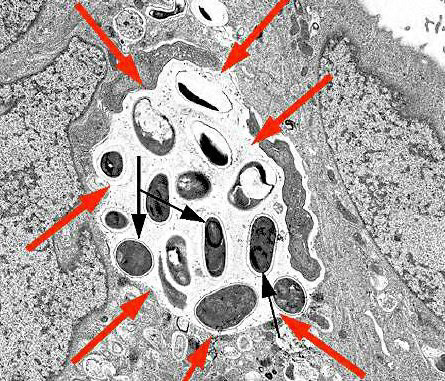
Transmission electron micrograph of Encephalitozoon intestinalis within parasitophorous vacuole